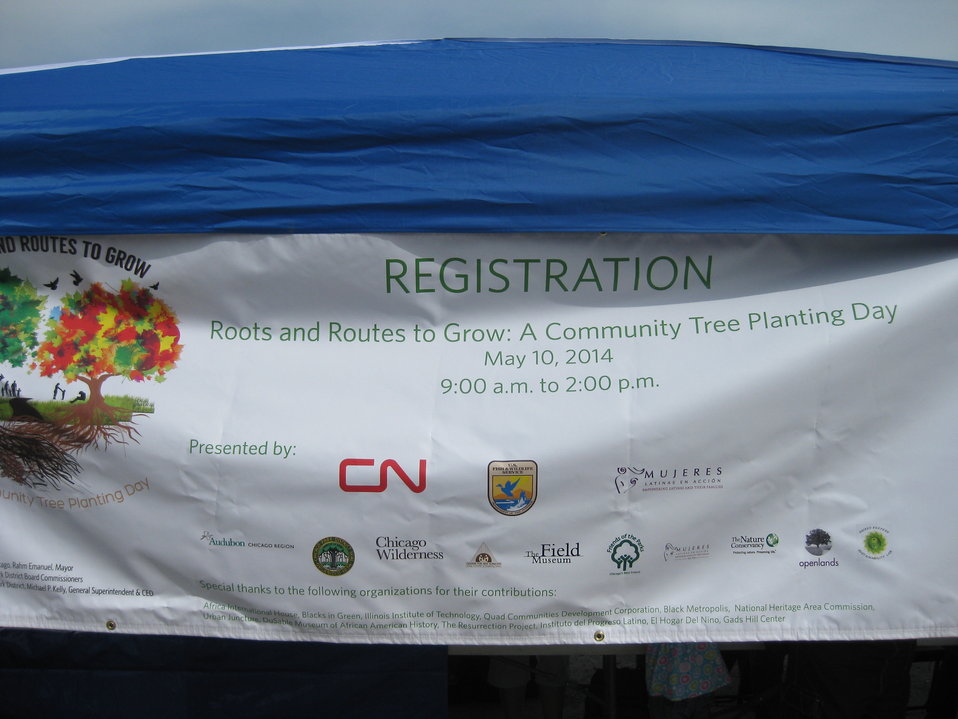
Chicago Burnham Wildlife Corridor sign

Chicago Park District Burnham Corridor Community Planting Day
May 10, 2014
Photo by USFWS; Louise Clemency